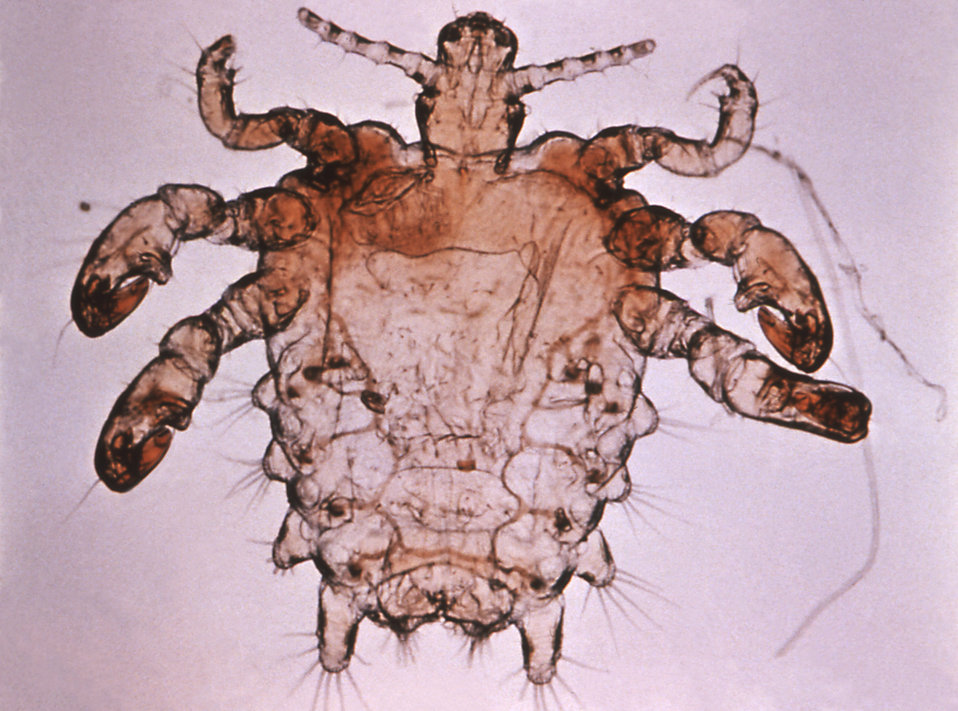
This is an enlargement of a Phthirus pubis, or more commonly known as the pubic or crab louse.